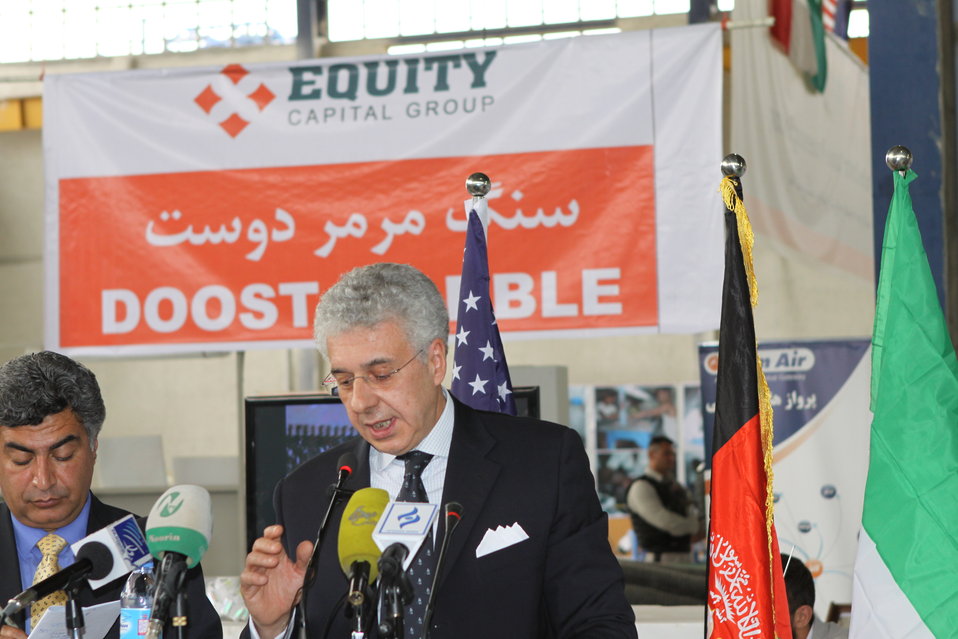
100525 Hirat Marble Conference 239